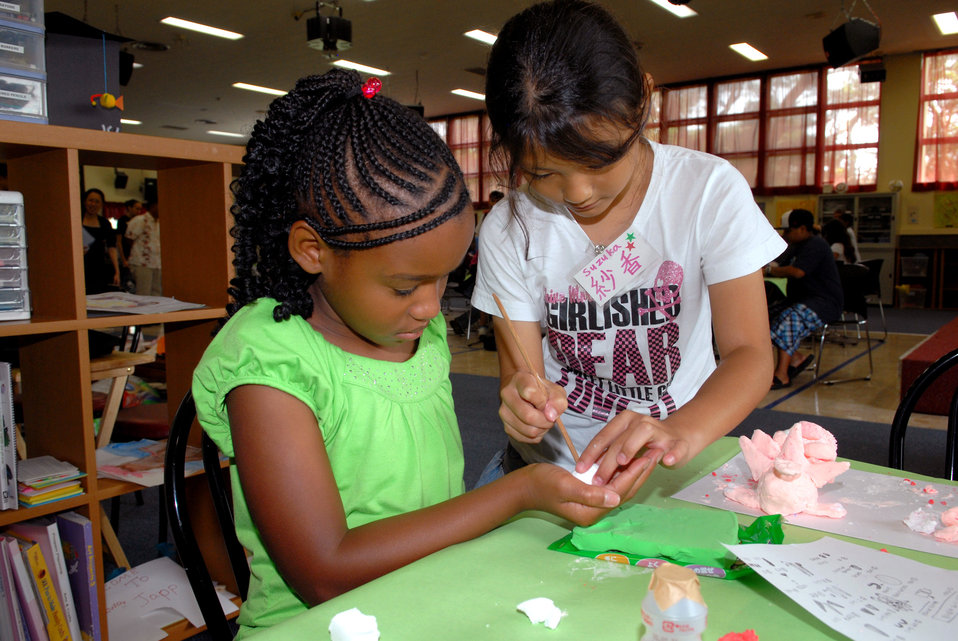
American, Japanese children

Mykia Moses (left) gets a helping hand making a Shisa dog from Suzuka Teruya (right) Aug. 5, 2010, at Kadena Air Base, Japan. The two children took part with about 40 others in an international exchange program organized by the Kadena Youth Center and the Chatan Town Lions Club here. In addition to making Shisa dogs, the children played ping pong, pool, and other games, and ate lunch at the base exchange food court here.